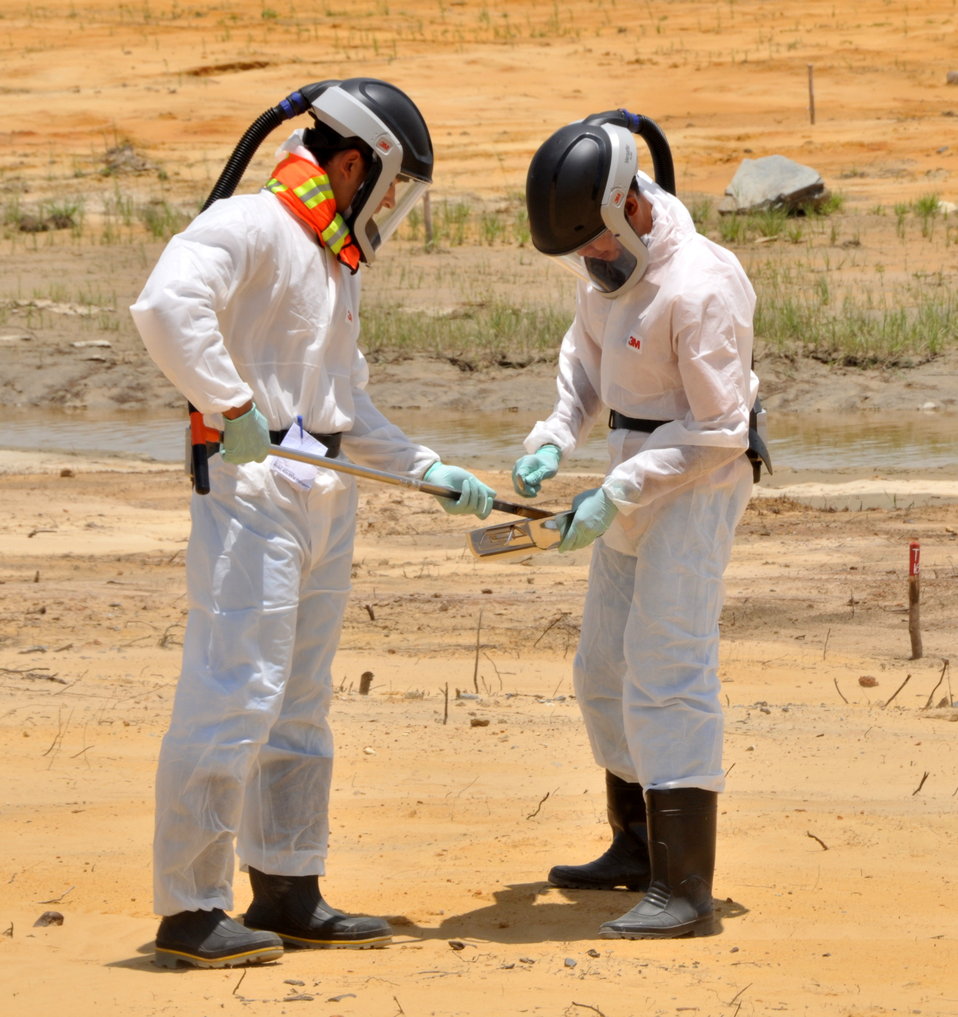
USAID Dioxin Contamination Project Progress: Soil Sampling

Progress at the Environmental Remediation of Dioxin Contamination Project at Danang Airport

July 16, 2013